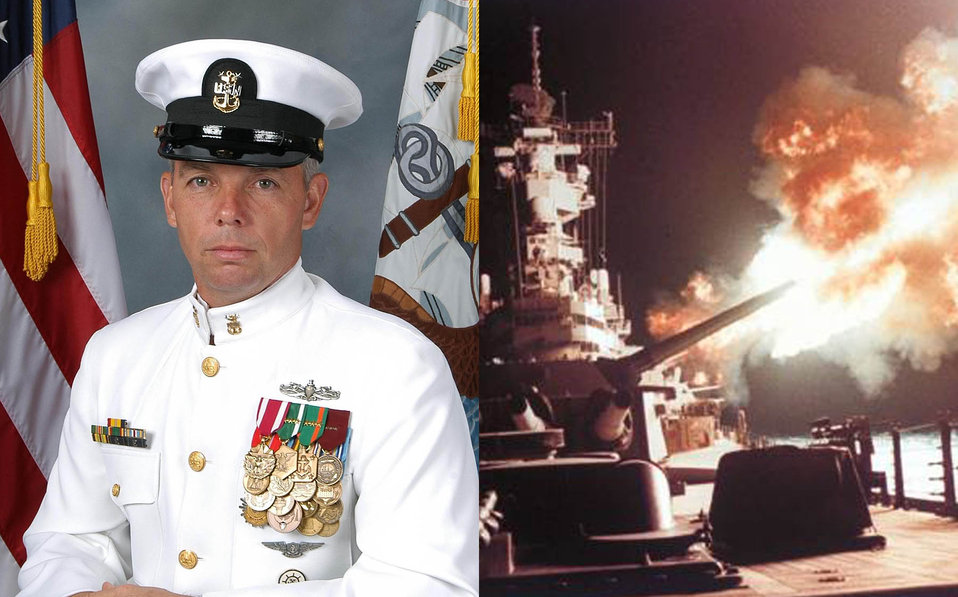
Brad Long

Brad A. Long (right- Naval gunfire support during Operation Desert Storm).
Brad A. Long retired after 21 years in U.S. Navy as a Master Chief Petty Officer (E-9) in September of 2006. He had been assigned to 10 warships and stationed in many places including California, Florida, Georgia, Hawaii, Illinois, Maine, and Virginia. .
Throughout these tours, he did six deployments, two of which were combat deployments; another deployment took him into the Black Sea where Soviet and KGB ships rammed his ship (USS CARON DD-970) in a dispute over “International Waters.” Master Chief Long’s jobs and positions ranged from Gun Mount Captain, Search and Rescue, Flight Deck Safety Officer, Departmental Leading Chief Petty Officer, a Navy Recruiter, Officer –in-Charge of Harbor Security, Force Protection and Anti-Terrorism, Officer-in-Charge of Navy Flotilla for Hurricane Ivan, and Transportation Czar for Hurricane Katrina. .
.
One of his highlights in his career was assisting with the sinking of the aircraft carrier, EX-USS ORISKANY, off the coast of Pensacola, Florida. (Right).
.
Brad’s second career started in October 2006, at Mississippi Sandhill Crane National Wildlife Refuge as a Facility Operations Specialist for construction. Brad’s position had him assisting in the construction of facilities in lower Alabama and Mississippi after a series of hurricanes devastated the Gulf Coast. In October 2008, Brad was accepted his current position as a Regional Facility Manager Coordinator for the Southeast Region. He moved to Daphne’s Ecological Service Office. In his this position, Brad travels to different National Wildlife Refuges and Fish Hatcheries to conduct Comprehensive Condition Assessments. To date, he has visited 47 National Wildlife Refuges and four Fish Hatcheries. Also, Brad completed the prestigious Stepping Up to Leadership curriculum. While attending SUTL, he had the unique opportunity and privilege to be at the Senate for Dan Ashe’s confirmation hearing. The highlight of Brad’s second career is the opportunity to meet and work with outstanding personnel throughout the region.